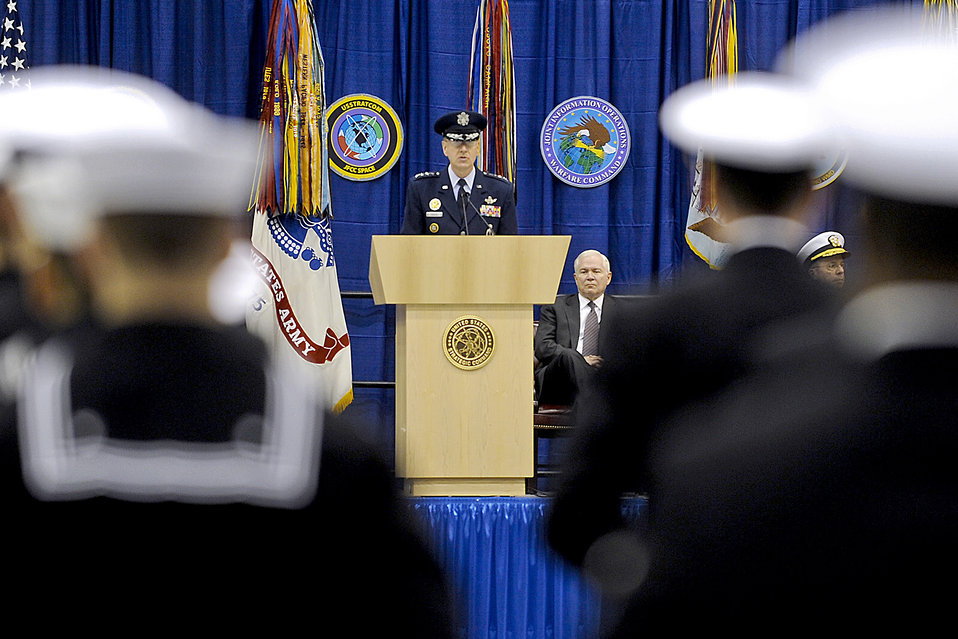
STRATCOM change of command

Gen. C. Robert Kehler, the new commander of U.S. Strategic Command, addresses the audience during the change-of-command ceremony Jan. 28, 2011, at Offutt Air Force Base, Neb., as outgoing commander Gen. Kevin P. Chilton retires.